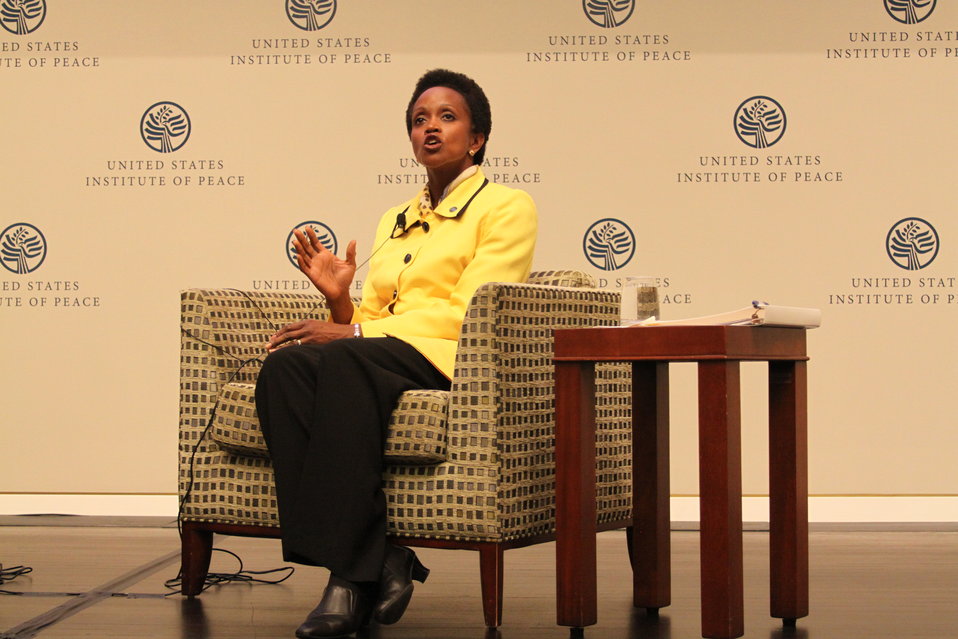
Assistant Secretary Brimmer Responds to Questions

U.S. Assistant Secretary for International Organization Affairs Esther Brimmer responds to questions at the U.S. Institute of Peace in Washington, D.C., on September 7, 2011.